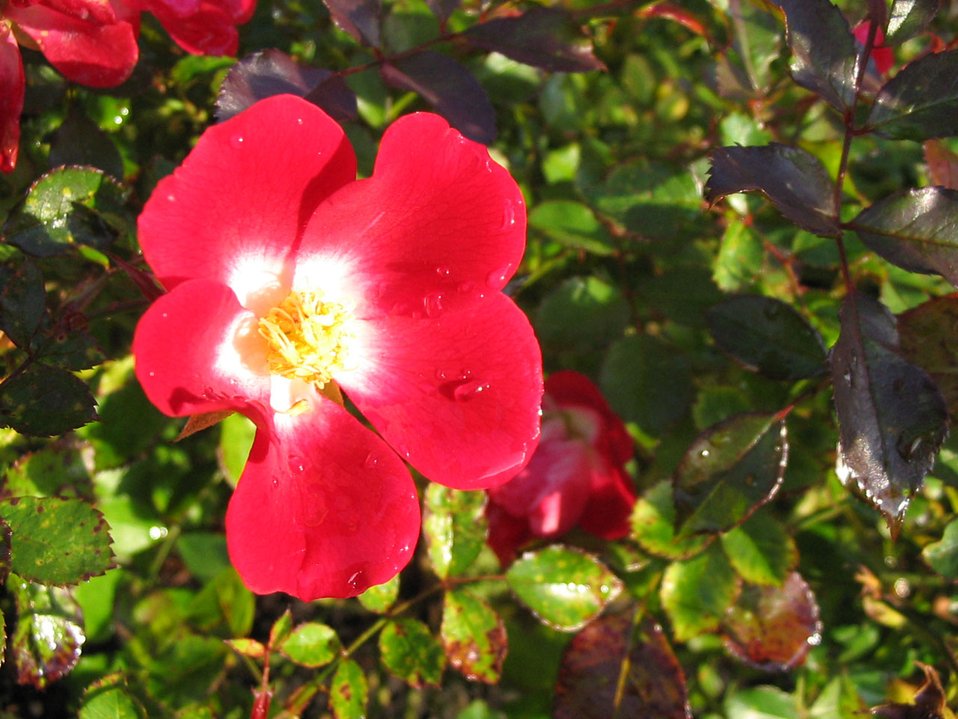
Wild rose in blossom.